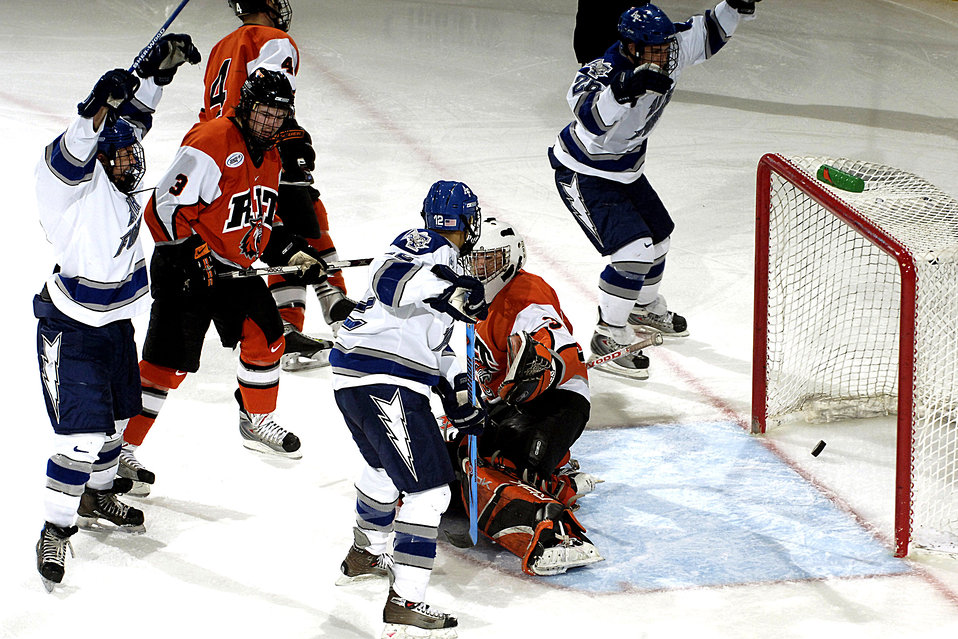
He SCOOOOORES!

Victorious hands go up as the U.S. Air Force Academy hockey team scores a goal against Rochester Institute of Technology Jan. 11 in the Cadet Ice Arena at Colorado Springs, Colo. The Academy defeated RIT 5-2 in an Atlantic Hockey Association game.